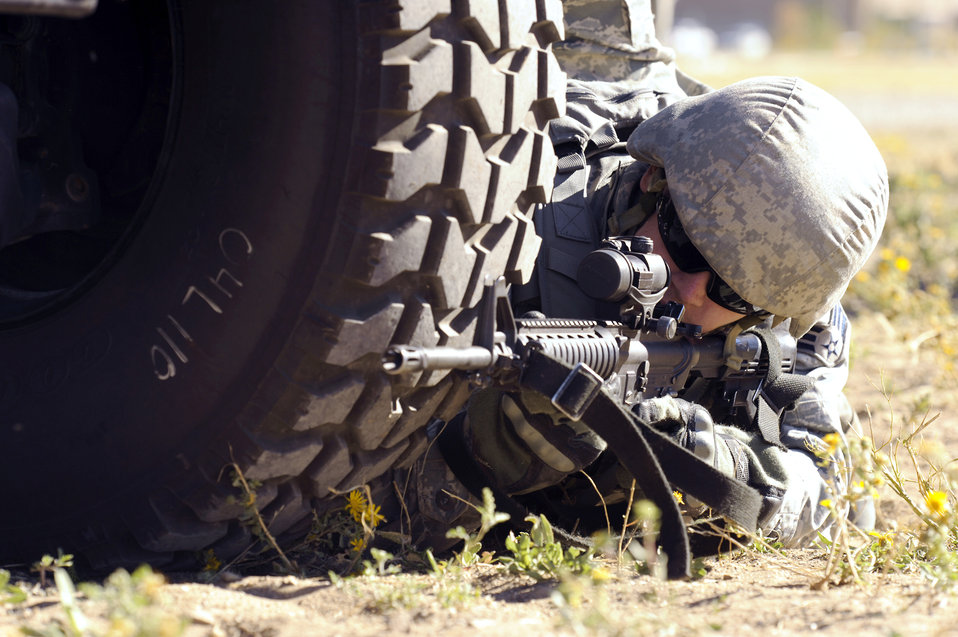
In my line of sight

An Airman takes aim while doing a practical exercise during the 75th Security Forces Combat Readiness Training course Sept. 17, 2010, at Hill Air Force Base, Utah. The CRT course provides Airmen with the basic skills needed to deploy, to include tactical movements, land navigation and self aid buddy care.